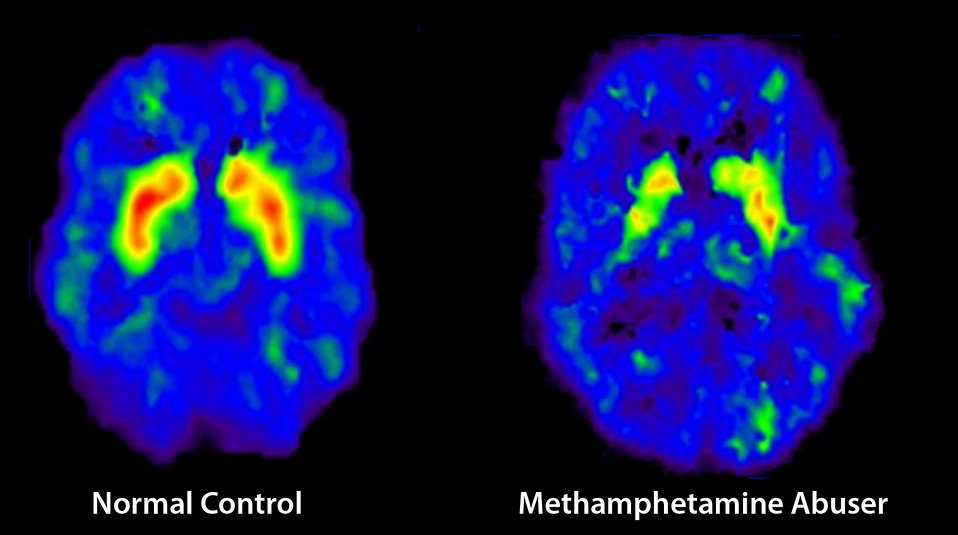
Brain Scan - meth

Methamphetamine abuse decreases dopamine transporter activity and compromises mental function.